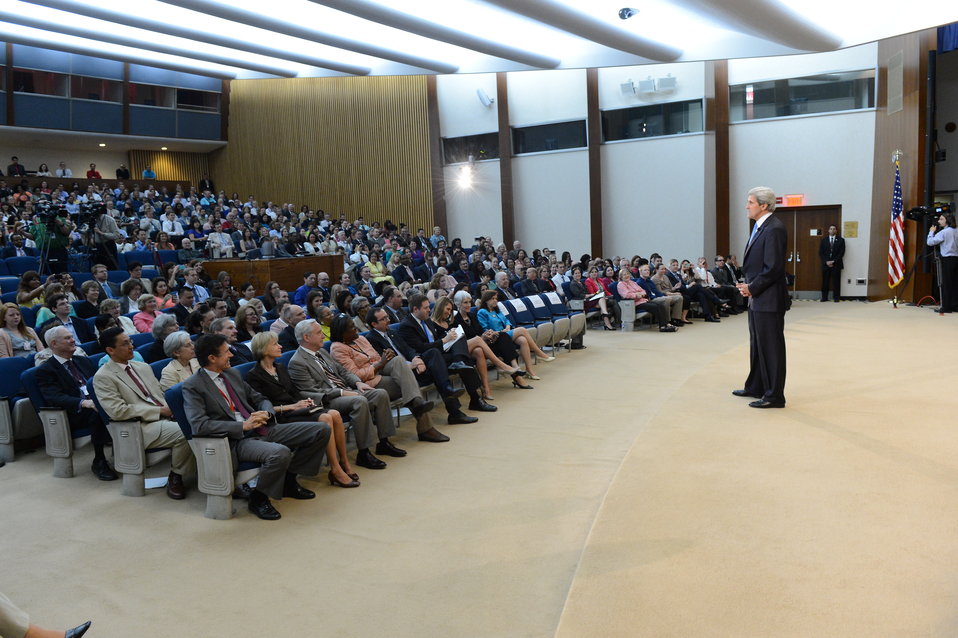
Secretary Kerry Listens to a State Department Employee's Question

U.S. Secretary of State John Kerry listens to a question from a Department employee during a town hall meeting at the U.S. Department of State in Washington, D.C., on May 30, 2013.